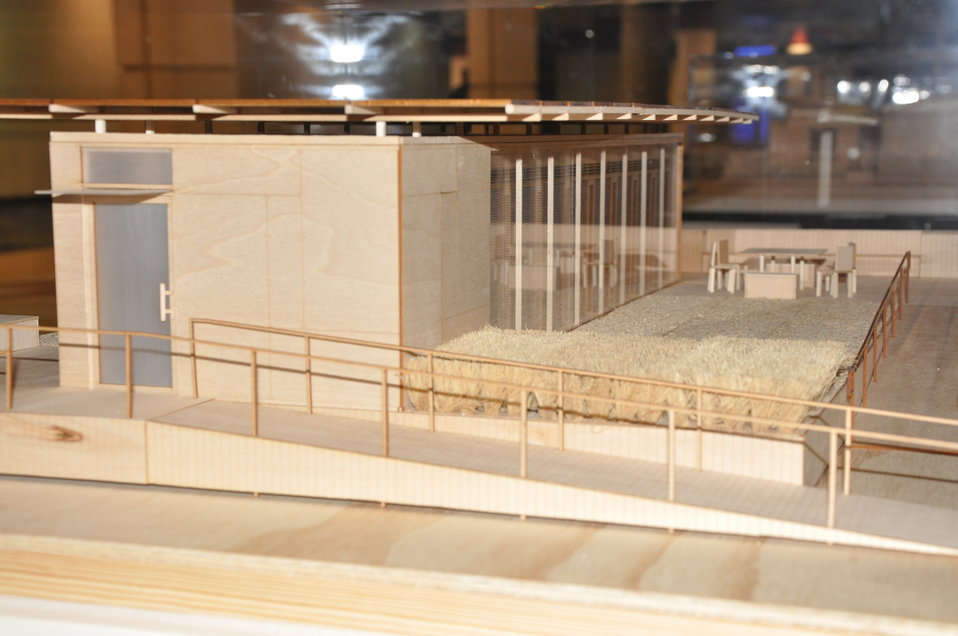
The University of Tennessee